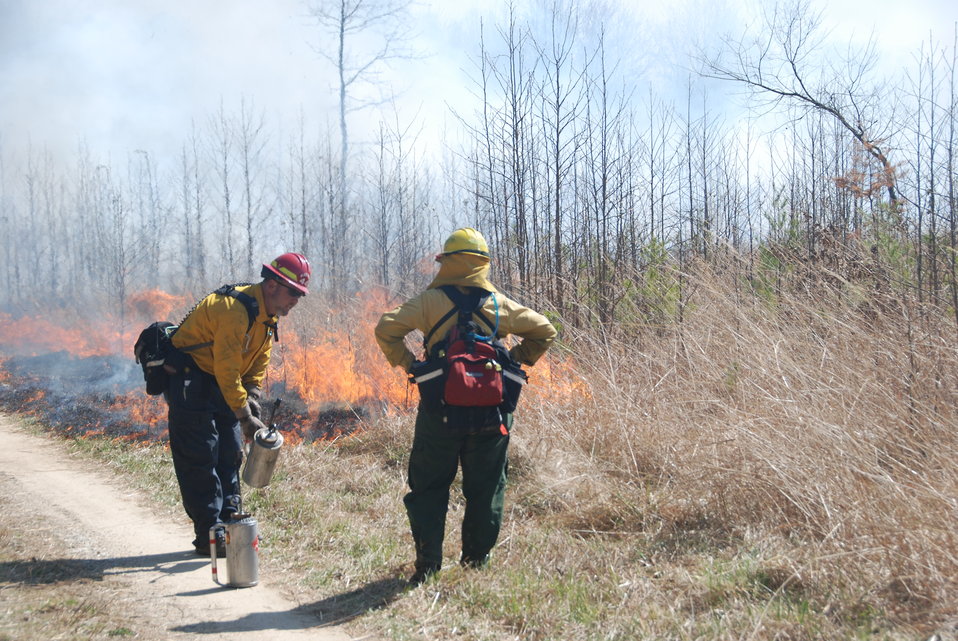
Drip Torches

Laurel, Maryland, April 14, 2012: Firefighter Steve Stack from Blackwater National Wildlife Refuge holds a drip torch used to light a controlled burn. The burn, at Patuxent Research Refuge, was to maintain native grasslands, remove woody vegetation, and control invasive species such as Korean Lespedeza.